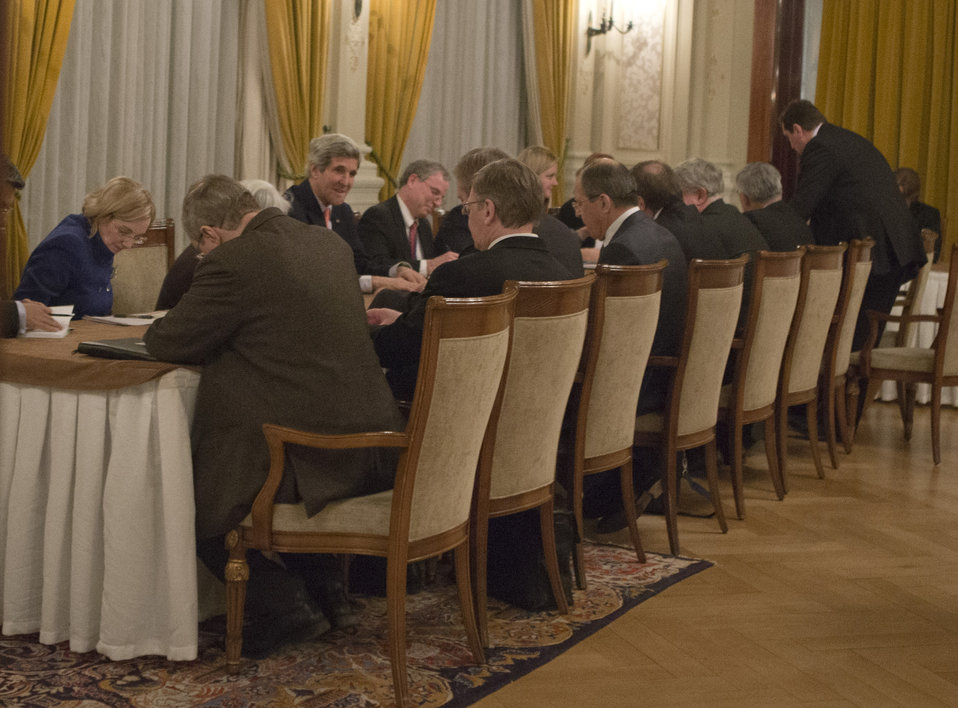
Secretary Kerry Meets With Russian Foreign Minister Lavrov

U.S. Secretary of State John Kerry meets with Russian Foreign Minister Sergey Lavrov on January 21, 2014, in Montreux, Switzerland, at the outset of meetings focused on reaching a negotiated political settlement in Syria.